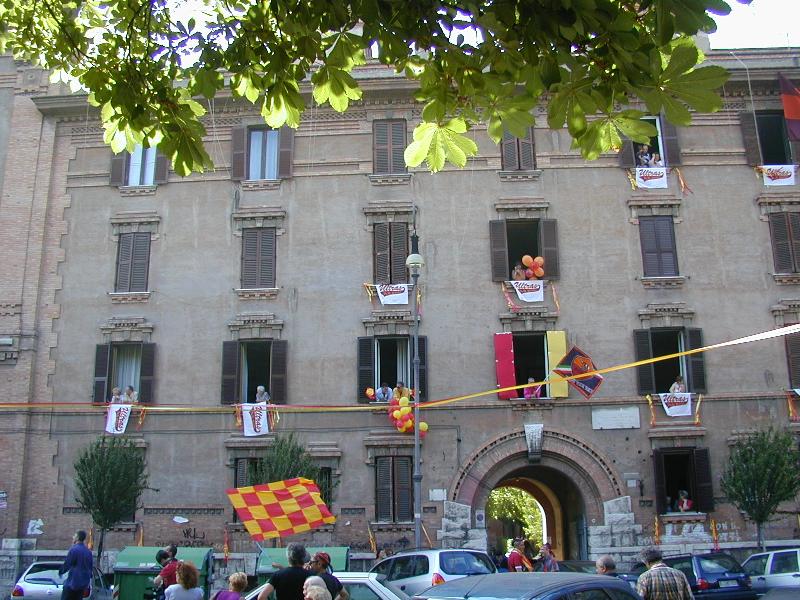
010617 44 testaccio